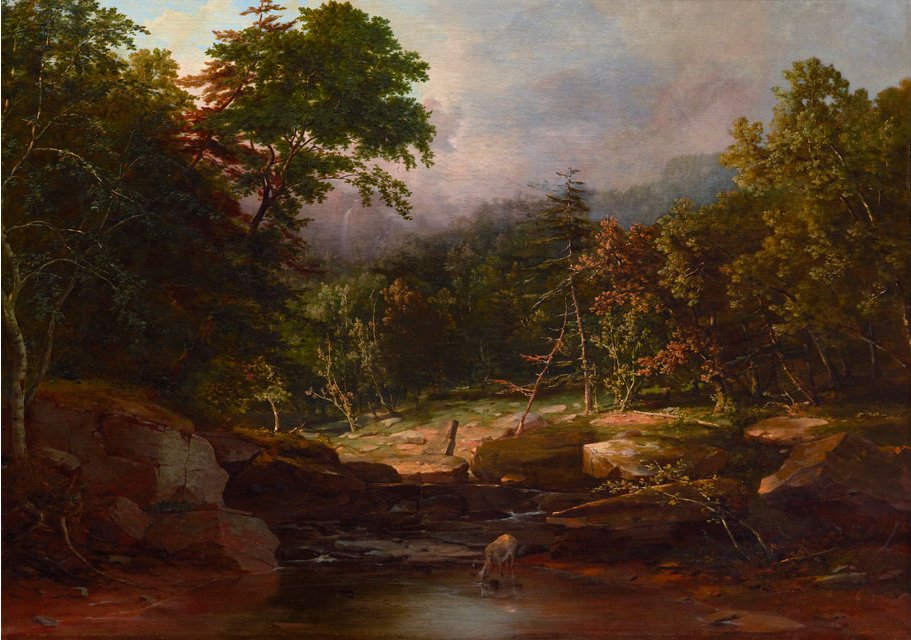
'Stream in the Mountains' by George Inness, Dallas Museum of Art